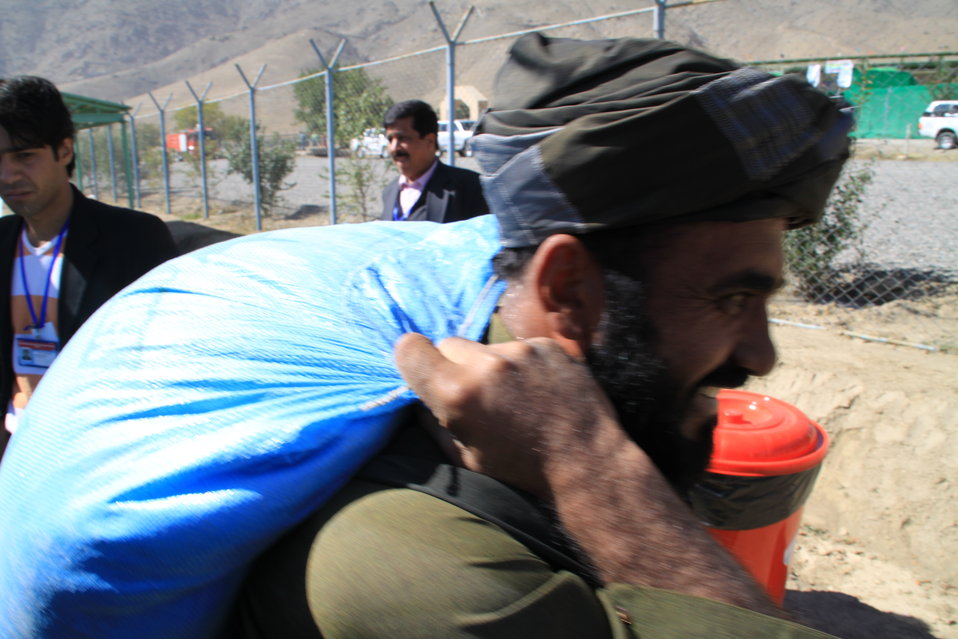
AVIPA Plus Wheat Seed Distribution 101005

US Ambassador Karl Eikenberry and USAID Acting Mission Director Kevin Brownawell joined the Minister of Agriculture, Irrigation and Livestock, H.E. Minister Mohammed Rahimi in signing a Memorandum of Understanding and distributing vouchers to area farmers for wheat and fertilizer.

US Ambassador Karl Eikenberry and USAID Acting Mission Director Kevin Brownawell joined the Minister of Agriculture, Irrigation and Livestock, H.E. Minister Mohammed Rahimi in signing a Memorandum of Understanding and distributing vouchers to area farmers for wheat and fertilizer.

US Ambassador Karl Eikenberry and USAID Acting Mission Director Kevin Brownawell joined the Minister of Agriculture, Irrigation and Livestock, H.E. Minister Mohammed Rahimi in signing a Memorandum of Understanding and distributing vouchers to area farmers for wheat and fertilizer.